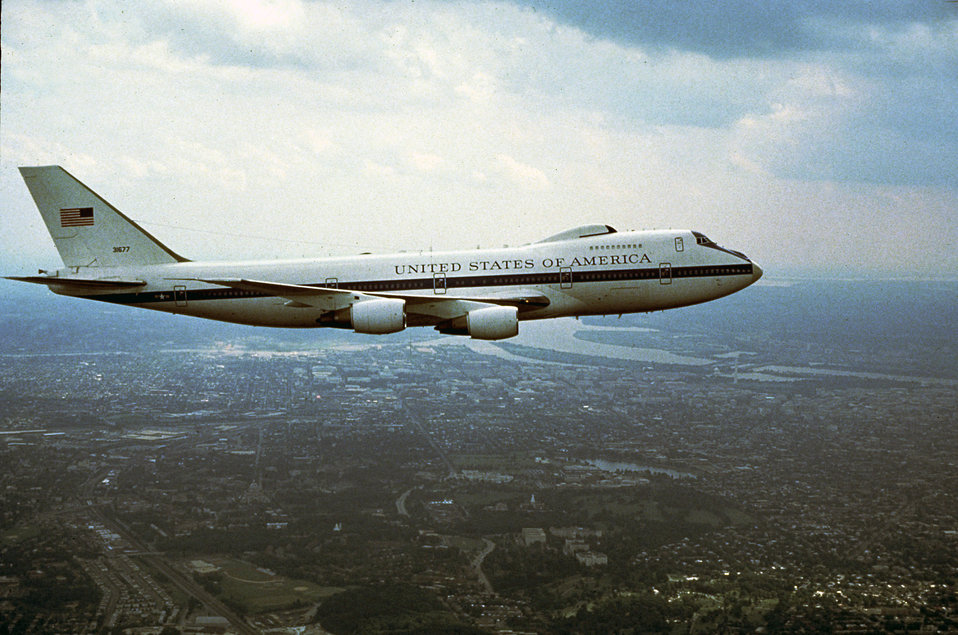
E-4B

1980s -- The first E-4B model was delivered to the Air Force in January 1980.